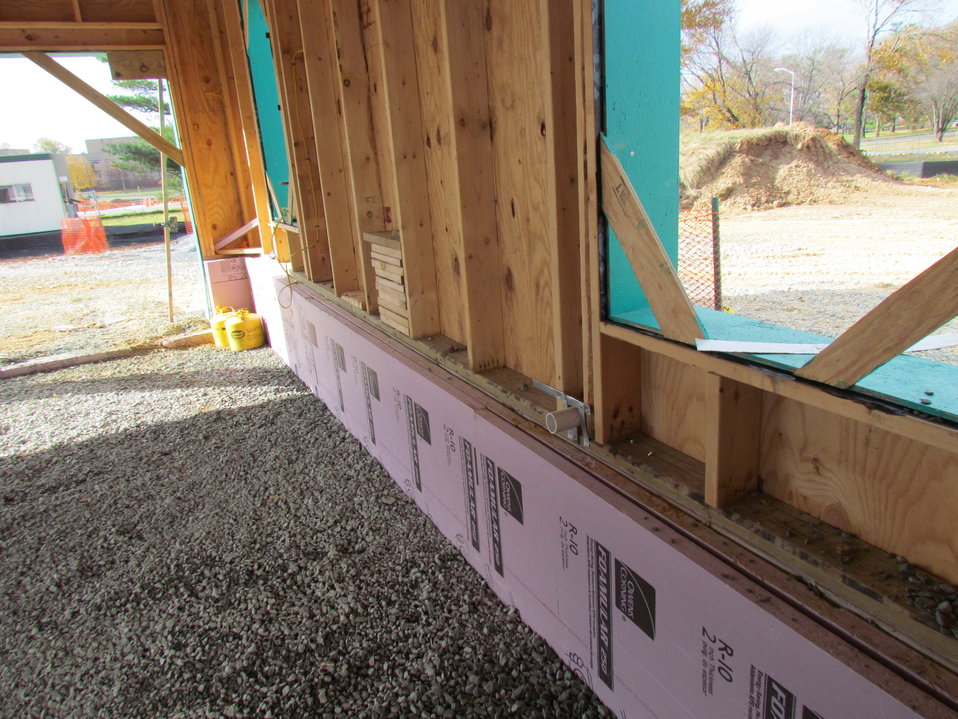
Net-Zero Energy Residential Test Facility - Photo showing the interior of the garage prior to pouring the concrete floor. Two two-inch pieces of extruded polystyrene insulation positioned against concrete knee walls.